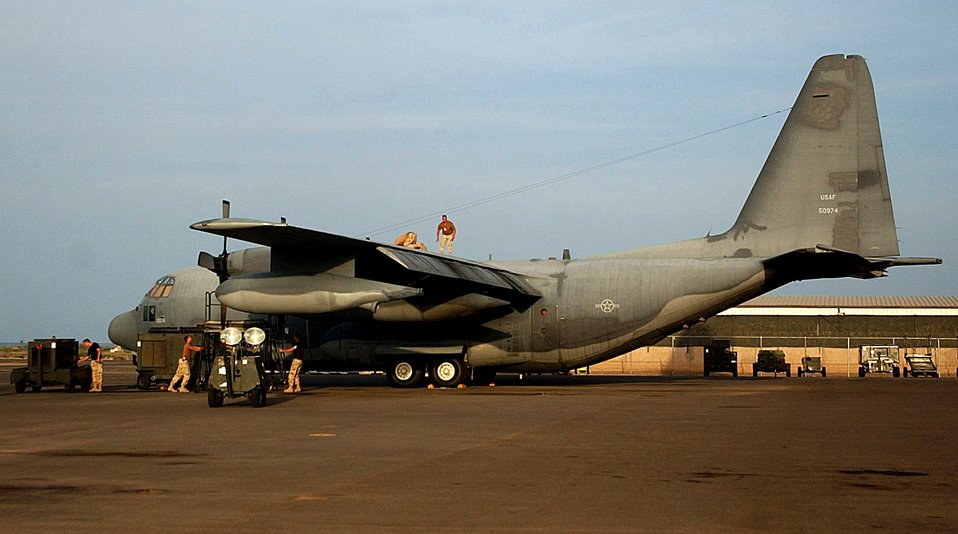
Guardsmen train during CJTF-HOA

DJIBOUTI, Africa (AFPN) -- Airmen from the 449th Expeditionary Rescue Squadron prepare an HC-130 for a Combined Task Force-Horn of Africa mission. The New York Air National Guardsmen are from the 102nd Rescue Squadron, the oldest ANG unit. While deployed to Djibouti, Africa, the unit performed pararescue drops, air refueling for Marine CH-53s and stayed on alert, ready to recover any downed servicemembers.